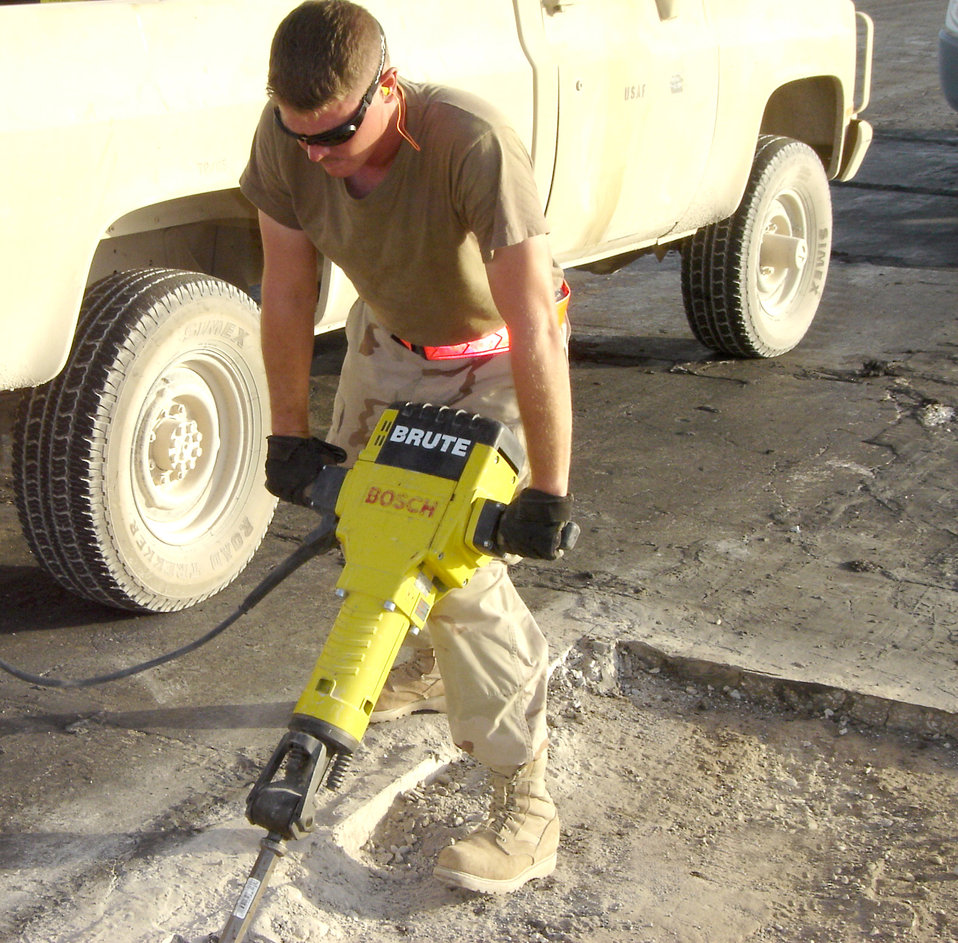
Red Horse Airmen keep Afghan supply lanes open

KANDAHAR AIRFIELD, Afghanistan -- Staff Sgt. Benjamin Knell jackhammers a concrete section on the active runway. He is assigned to the 451st Civil Engineer Group.